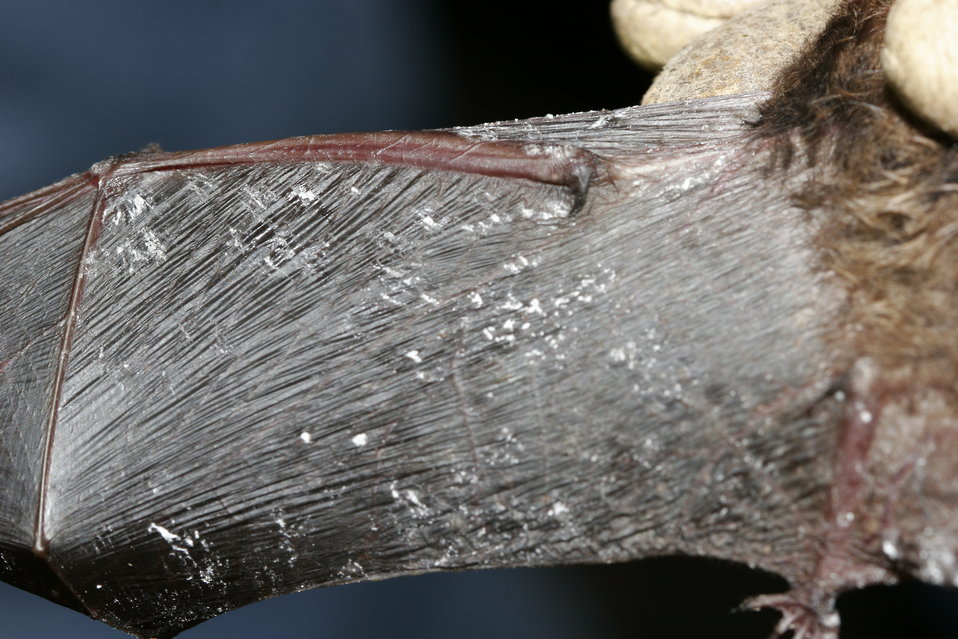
Little brown bat; Fungus on wing membrane, Oct. 2008, New York

Credit: Photo courtesy Ryan von Linden/New York Department of Environmental Conservation

Image size: 3504p (49 in.) W x 2336p (32 in.) H, 72 ppi, 3.1 MB